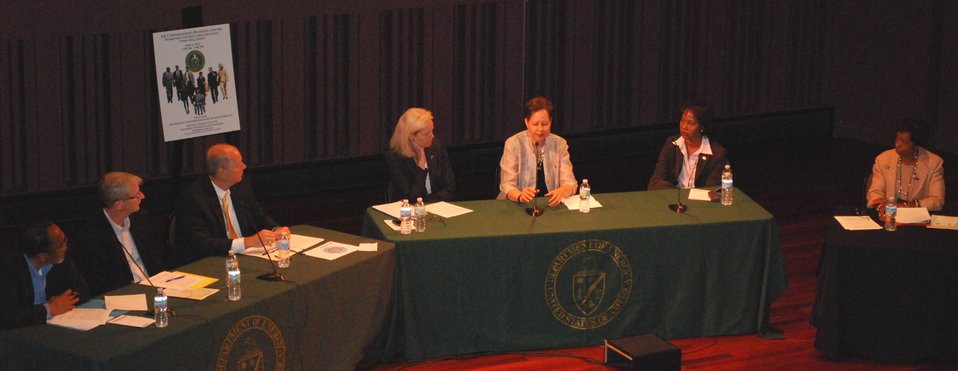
EECBG Diversity and Inclusion Town Hall

On June 6, 2012, the Department held a Diversity and Inclusion Town Hall at our Ohio site.